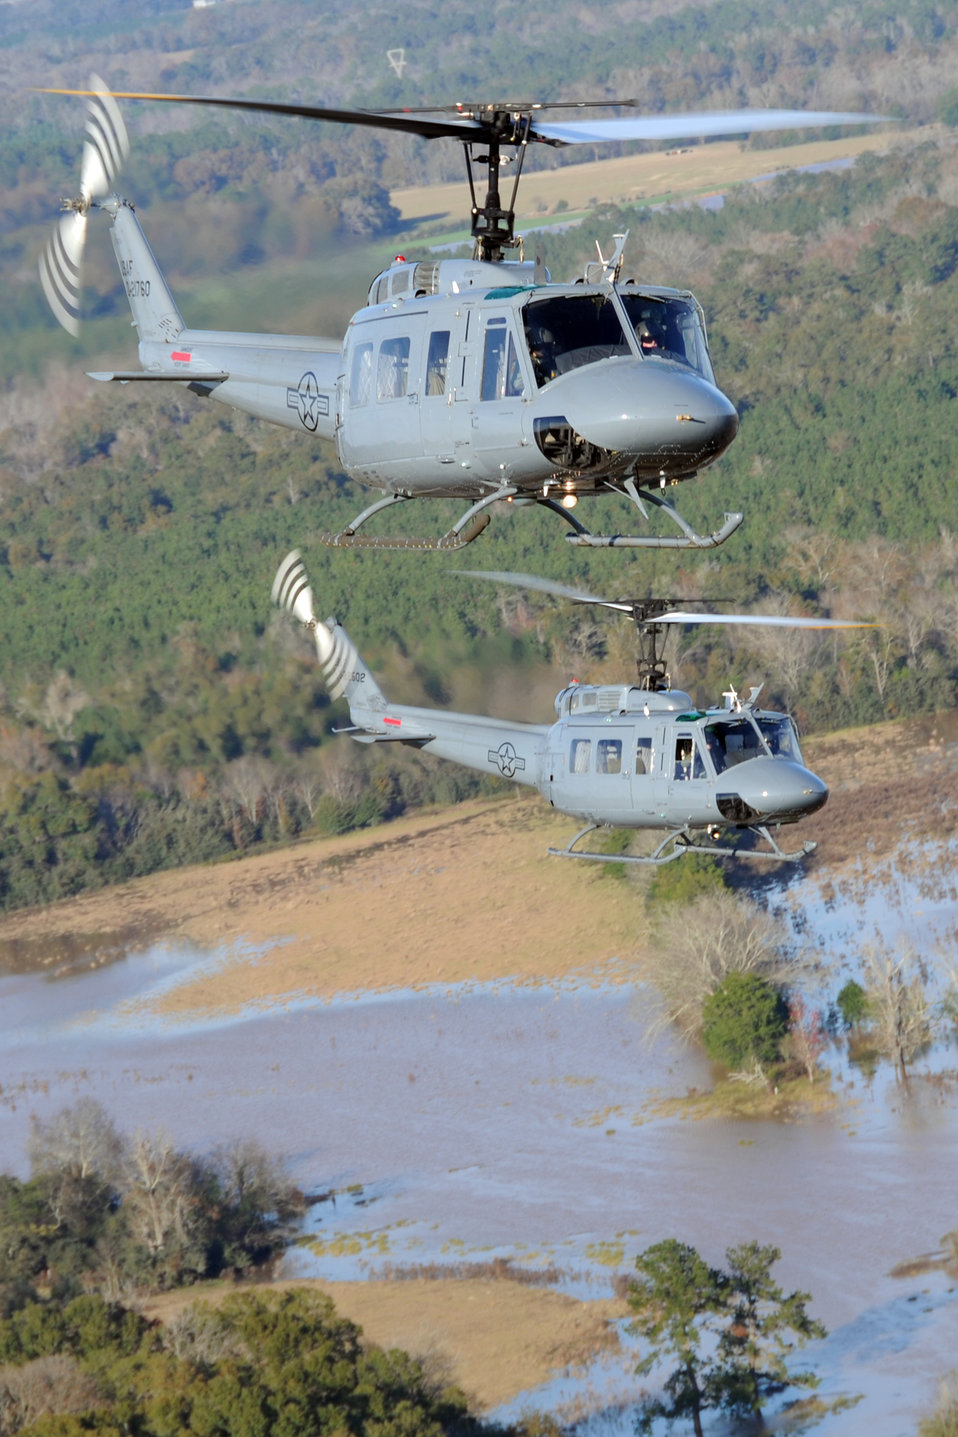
Helicopter training

Students from the 23rd Flying Training Squadron at Fort Rucker, Ala., piloting UH-1H Iroquois helicopters, practice formation-flight patterns. The 23rd FTS is the third and final phase of undergraduate pilot training before the student pilots can obtain their wings. It is the Air Force's primary source of helicopter pilot training for special operations, combat search and rescue, missile support and distinguished visitor airlift missions.